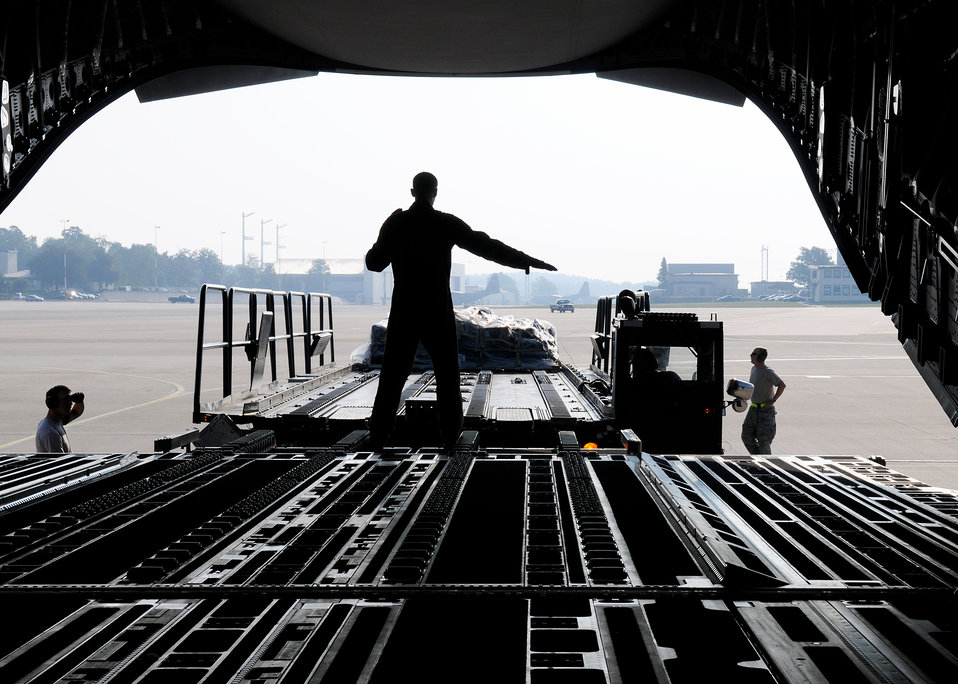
New unit, new way of doing international business

U.S. Air Force Tech. Sgt. Chris Copans directs a pallet onto a C-17 Globemaster III Aug. 18 at Ramstein Air Base Germany. The C-17, assigned to the Heavy Airlift Wing at Papa Air Base, Hungary, is the first of three C-17s to be assigned to the HAW. The HAW comprises 12 nations and operates independently of NATO's military command. It was created to help nations meet global reach commitments. Sergeant Copans is a HAW loadmaster.